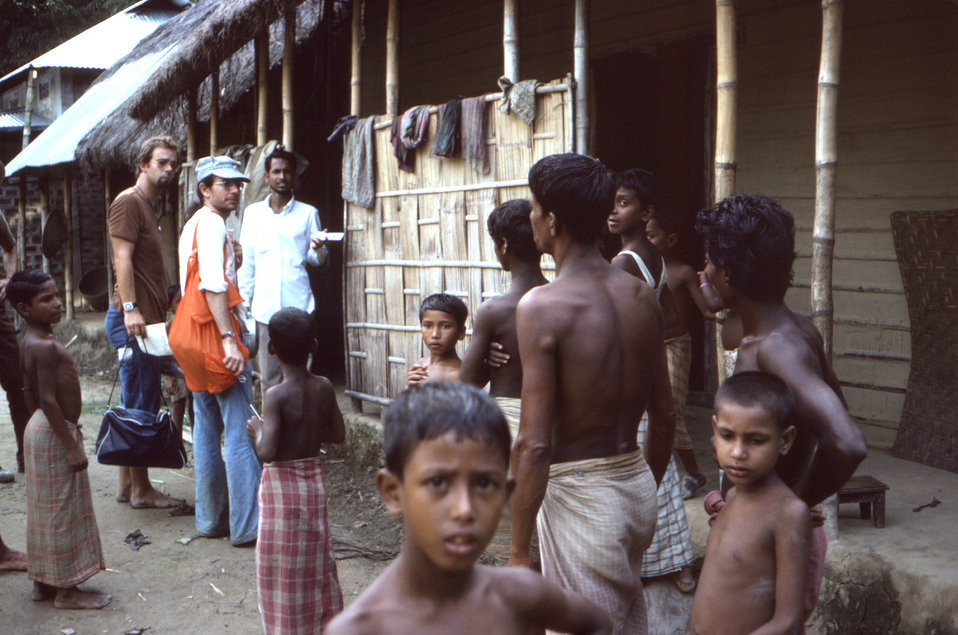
Photographed here in the Sylet District of north-eastern Bangladesh, was Dr. Patrice Engelberts in a brown shirt, Dr. Michael Schwartz wearing his cap, and an accompanying translator, as they were in the process of conducting a national search for smallpox.